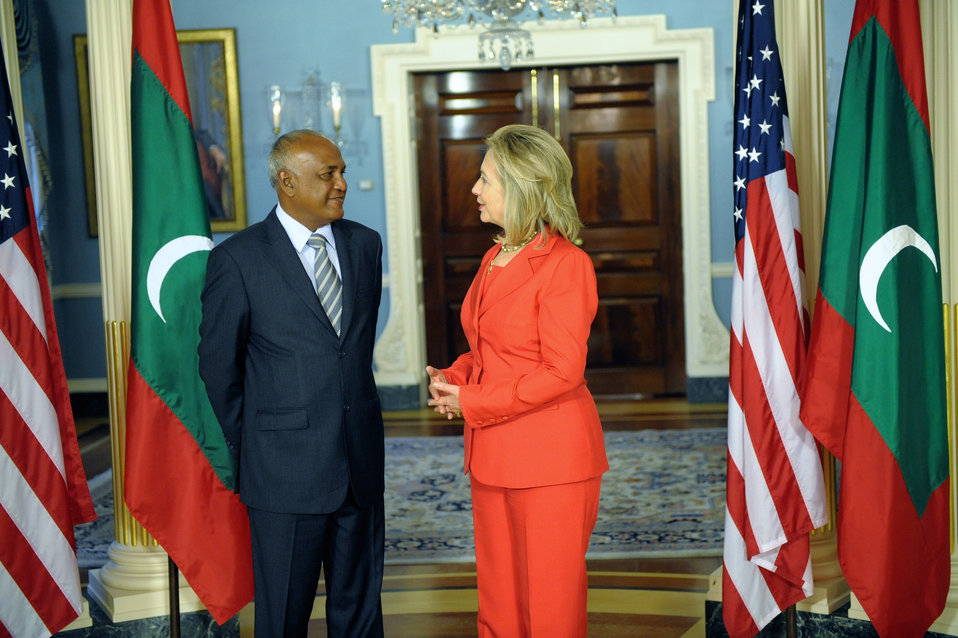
Secretary Clinton Speaks With Maldivian Foreign Minister Naseem

U.S. Secretary of State Hillary Rodham Clinton holds a bilateral meeting with Maldivian Foreign Minister Ahmed Naseem, at the U.S. Department of State in Washington, D.C., on July 13, 2011.